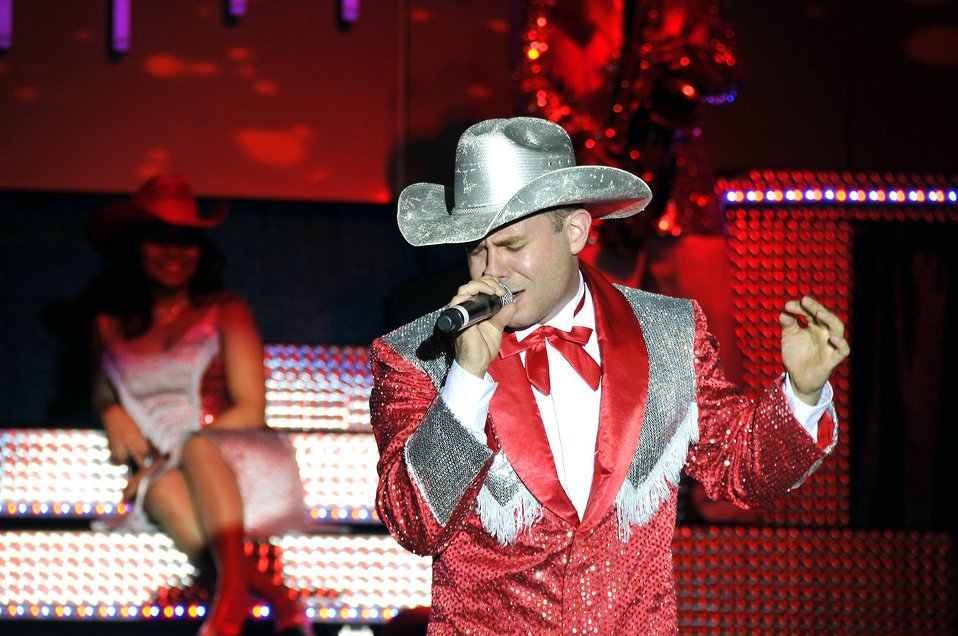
I'm a little bit -- country

Tops in Blue vocalist Senior Airman Nicholas Amari sings Dec. 29 at the Misawa Civic Center at Misawa Air Base, Japan.